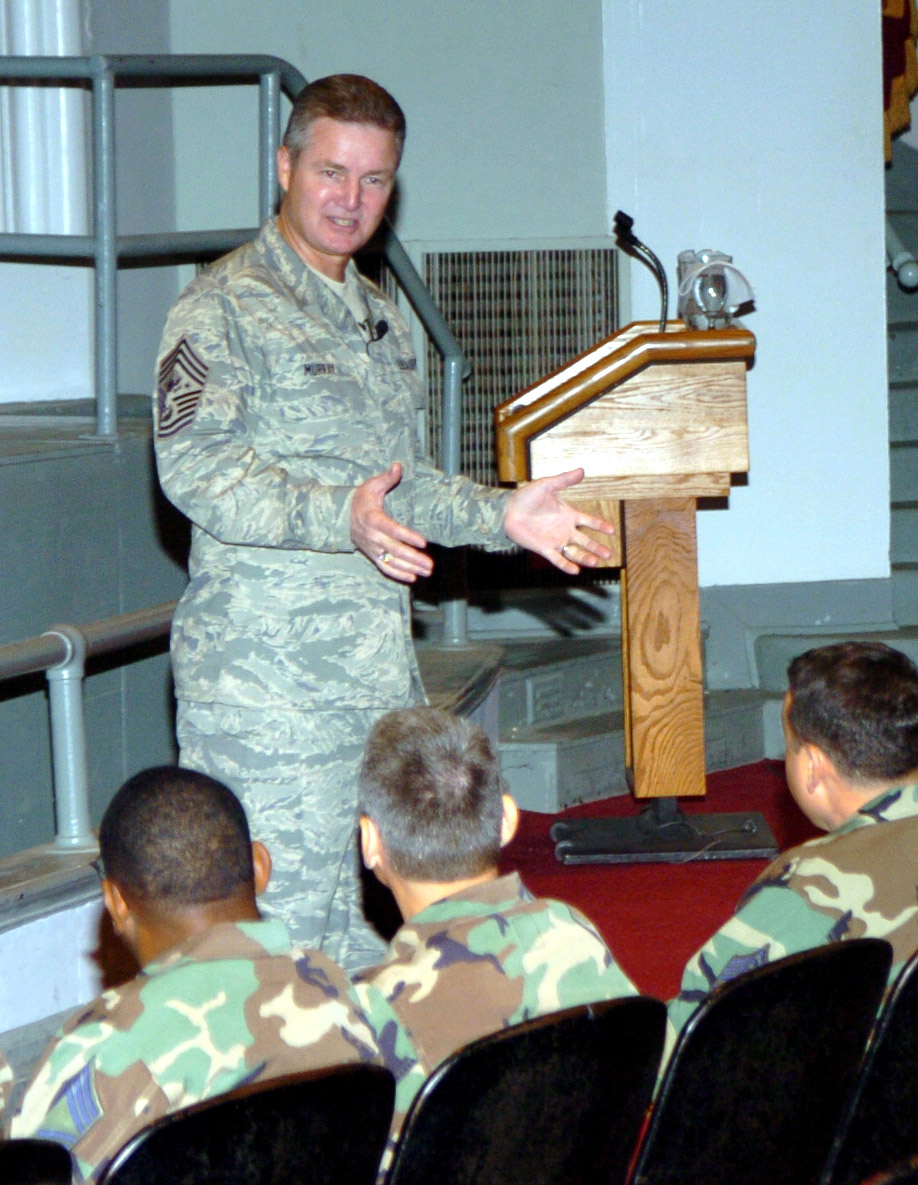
CMSAF discusses future at enlisted call

RANDOLPH AIR FORCE BASE, Texas (AFPN) -- Chief Master Sgt. of the Air Force Gerald R. Murray talks with Airmen here during an enlisted call at the base theater.